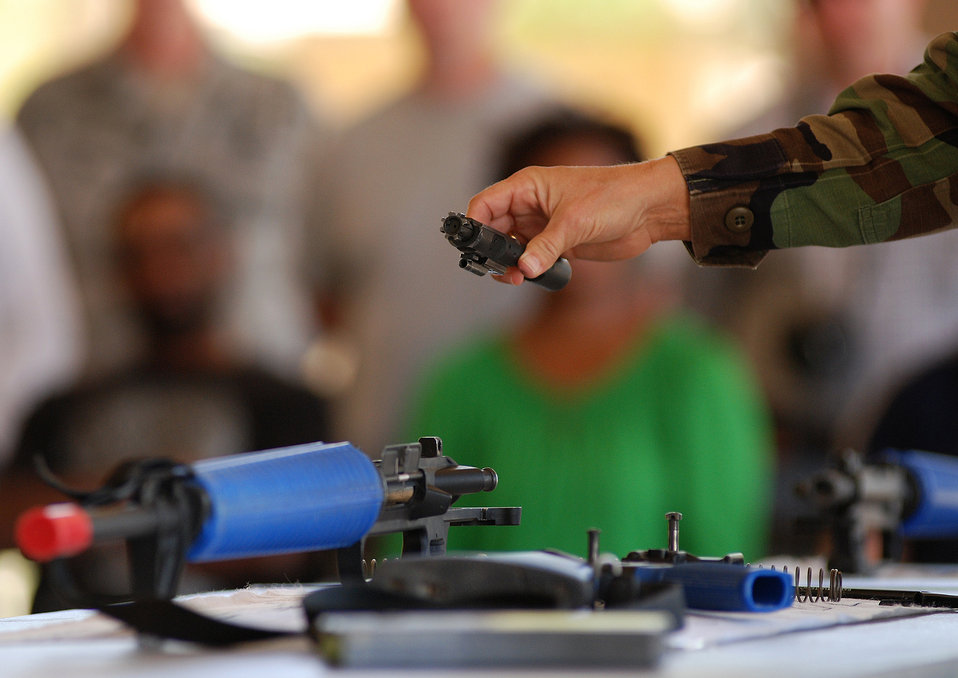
Retired airmen called back to duty

Retired Air Force majors and master sergeants take part in the 2009 Push-Pull exercise at Lackland Air Force Base, Texas. The exercise tested the ability of Air Force officials to recall retired Airmen with specific skills should their expertise be needed in the future.